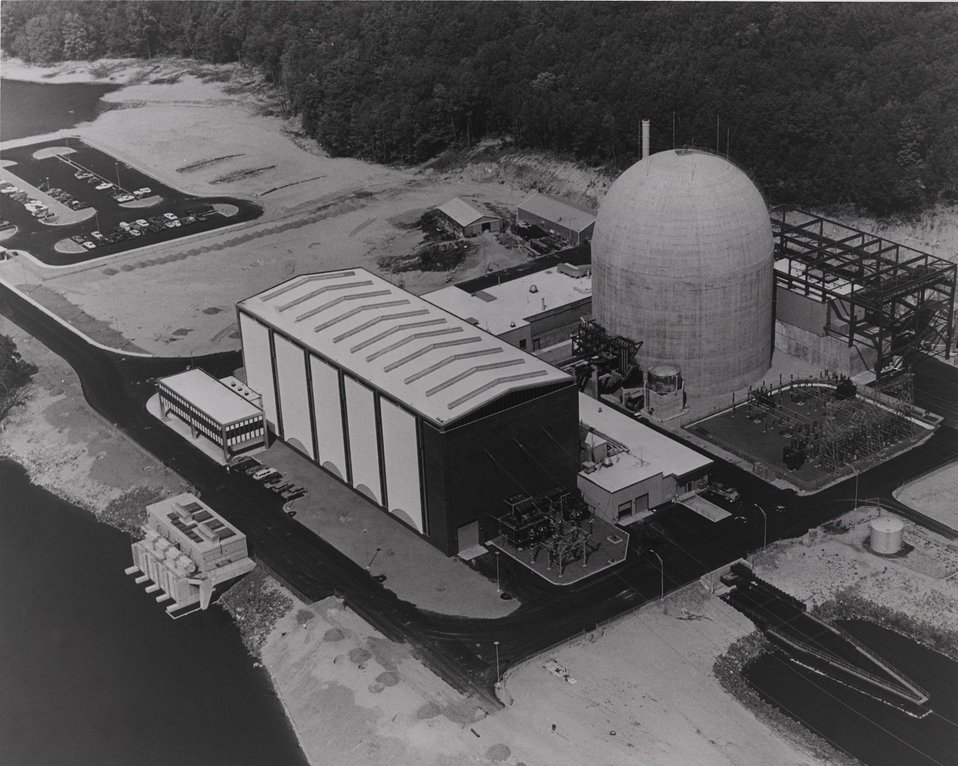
Haddam Neck.